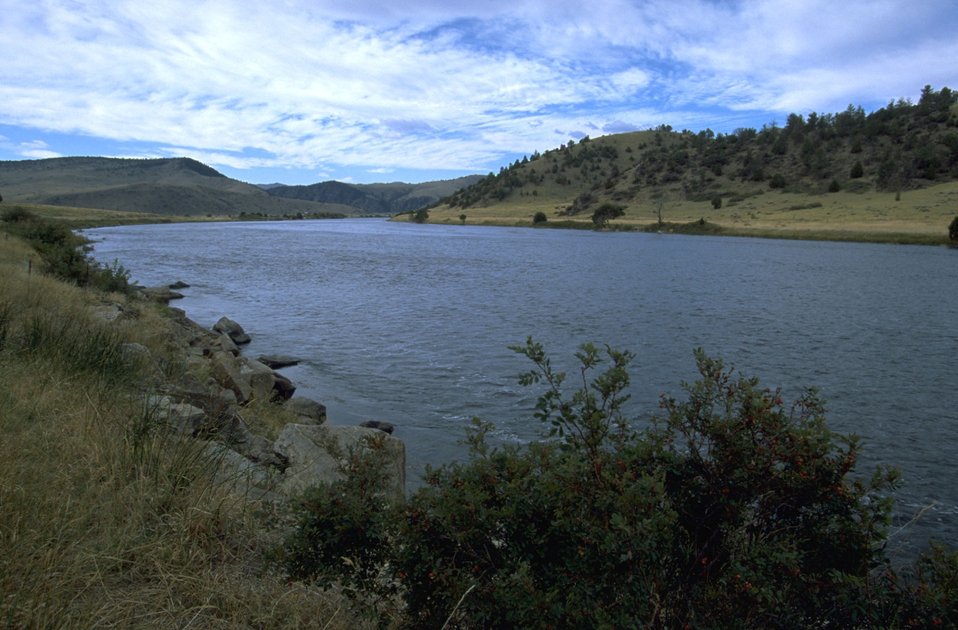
The Madison River